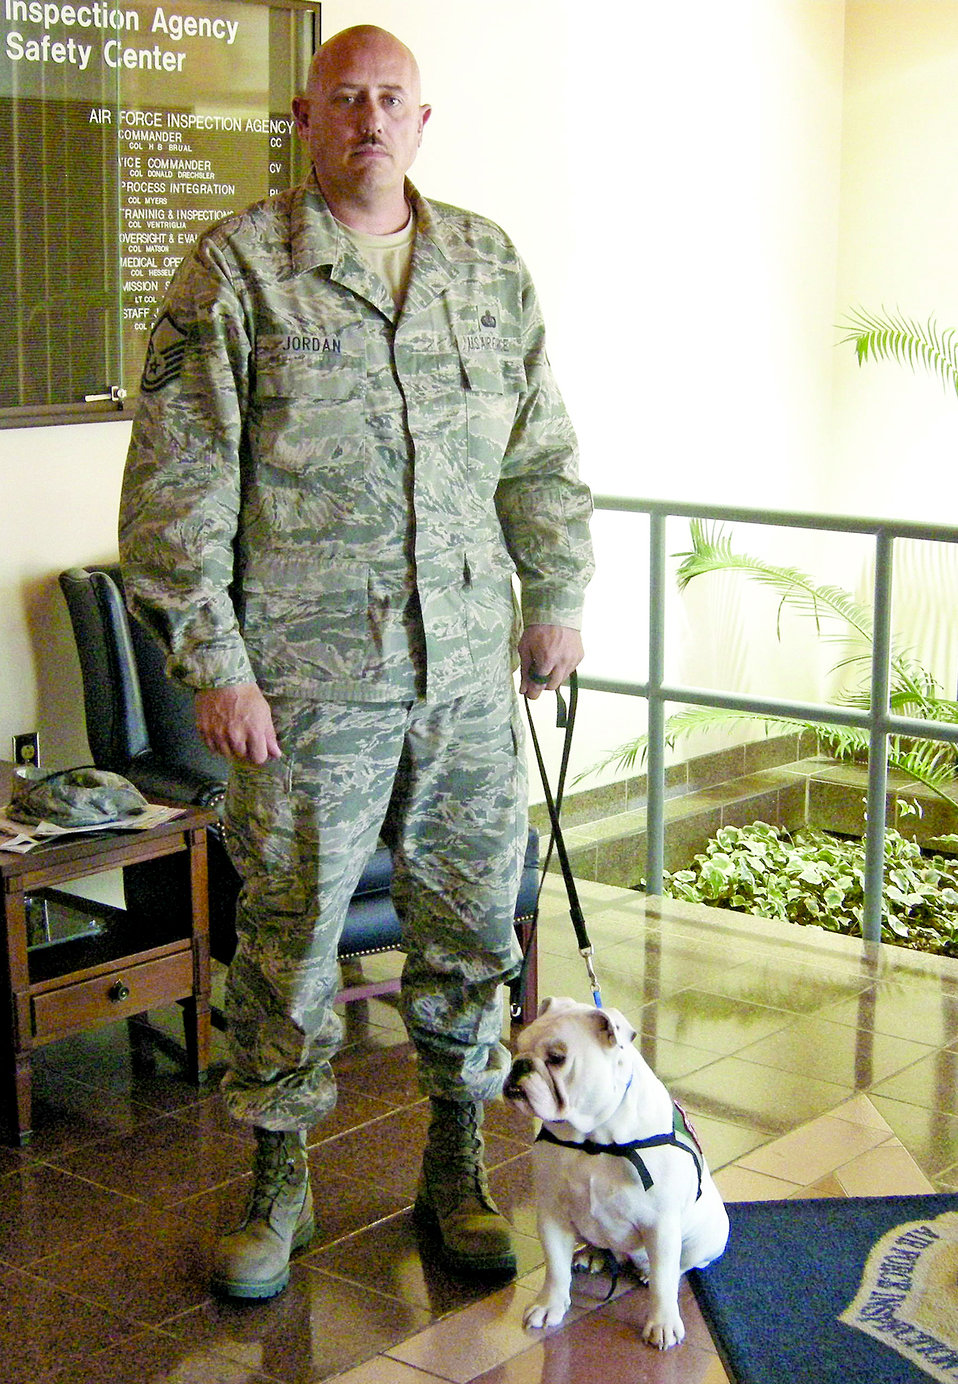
PTSD service dog

Master Sgt. Justin Jordan takes a break with Dallas, his with two-year-old English Bulldog. Dallas is a service dog trained to help Sergeant Jordan recover from post-traumatic stress disorder.